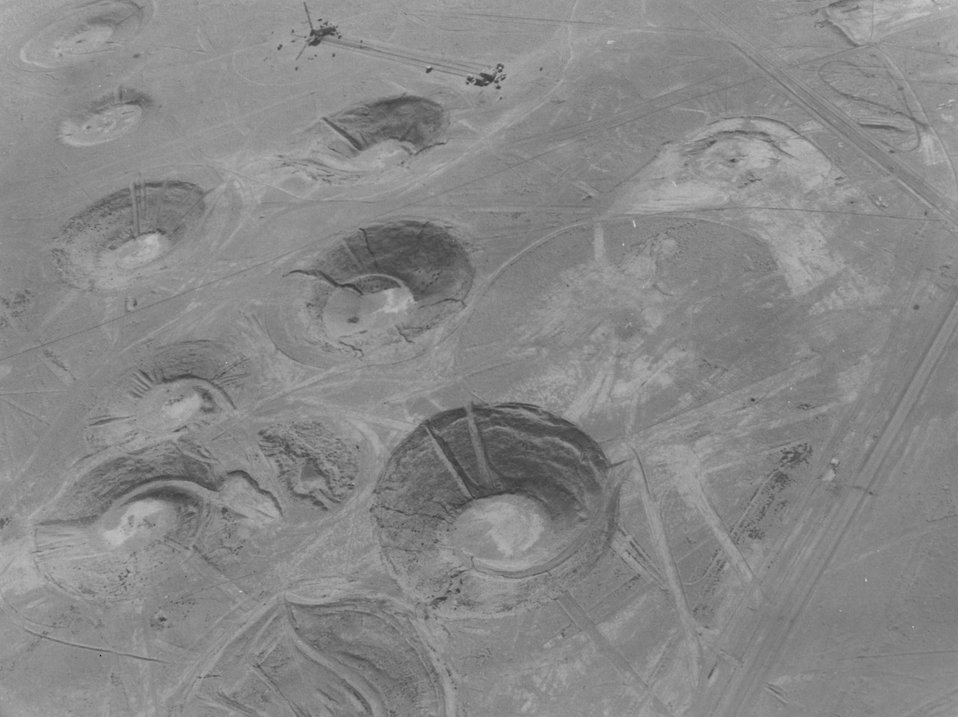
Loose, gravelly soil in Yucca Flat caves after underground tests, forming huge craters. c. 1967